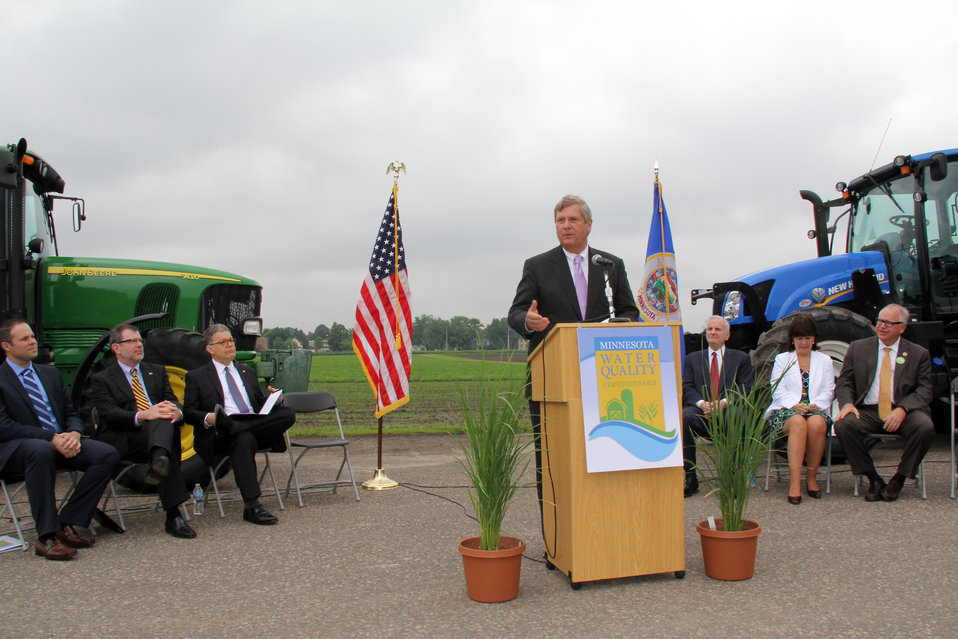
Agriculture Secretary Tom Vilsack announces the launch of the Minnesota Agricultural Water Quality Certification program held at St. Paul University, St. Paul, MN on Monday, Jun. 10, 2013. This program is the first of its kind in the nation and is the product of a state-federal Memorandum of Understanding (MOU) signed by Minnesota Governor Dayton, Agriculture Secretary Vilsack and former Environmental Protection Agency (EPA) Administrator Lisa Jackson in January 2012.